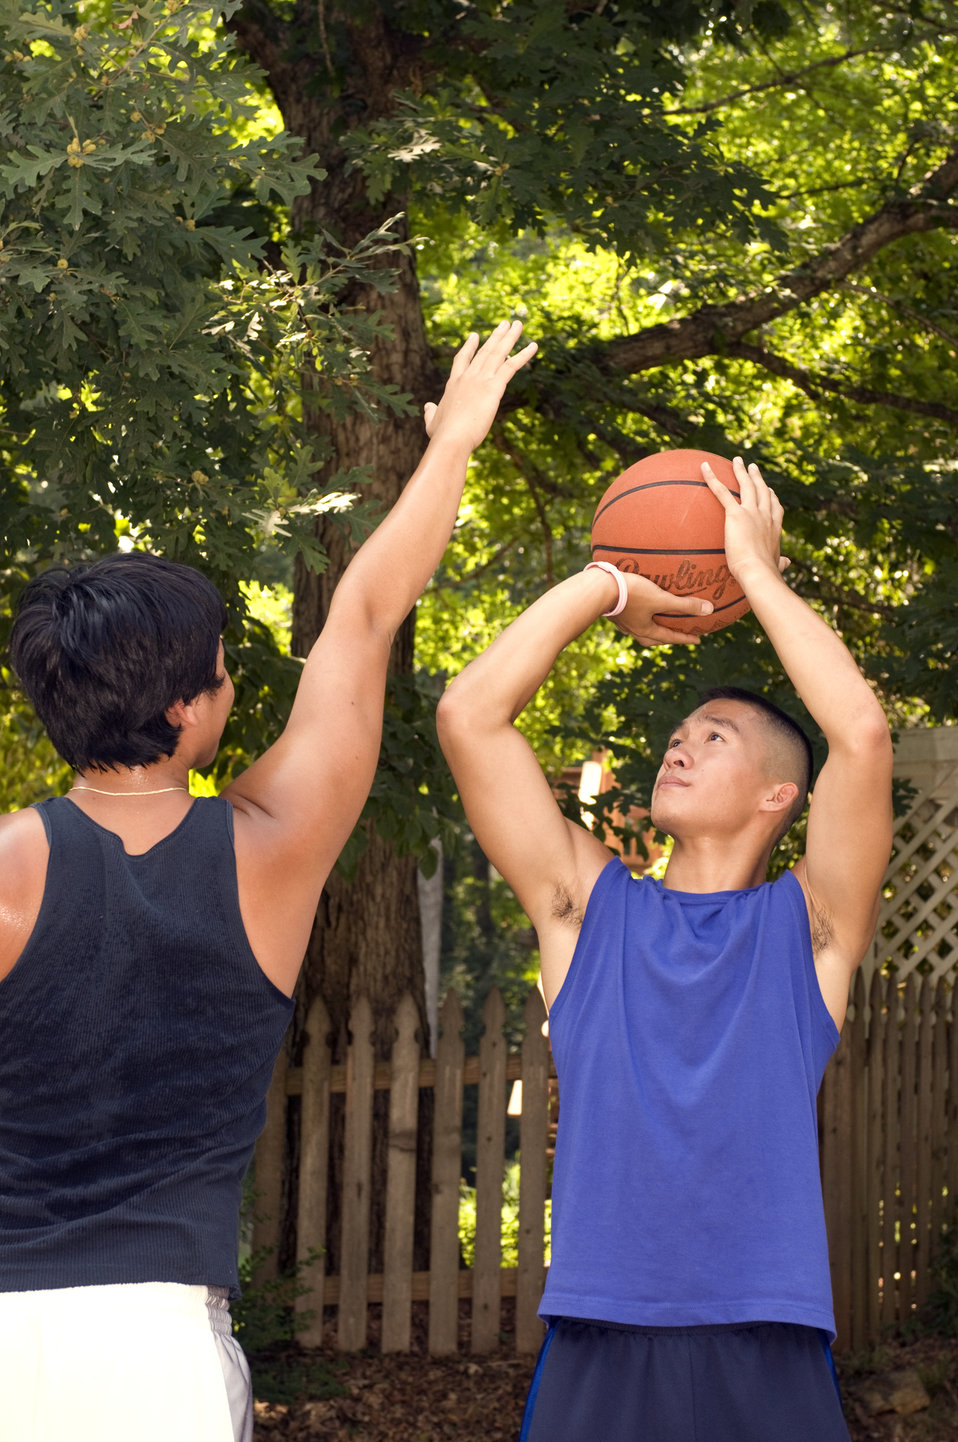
These young men were practicing their moves on a basketball court during a casual game on a nice sunny Georgia day. In this particular view, they were playing one-on-one. The man on the right, wearing his bright blue top, was in the process of taking his shot, while the man at left, wearing his darkly-colored top, was attempting to block the shot by placing his right hand in the path of the ball. Being that this was an outdoor game, sunscreen had been applied to their sun-exposed skin. Hopefully, they'd packed, or had access to some drinking water, which would keep them hydrated in the heat.